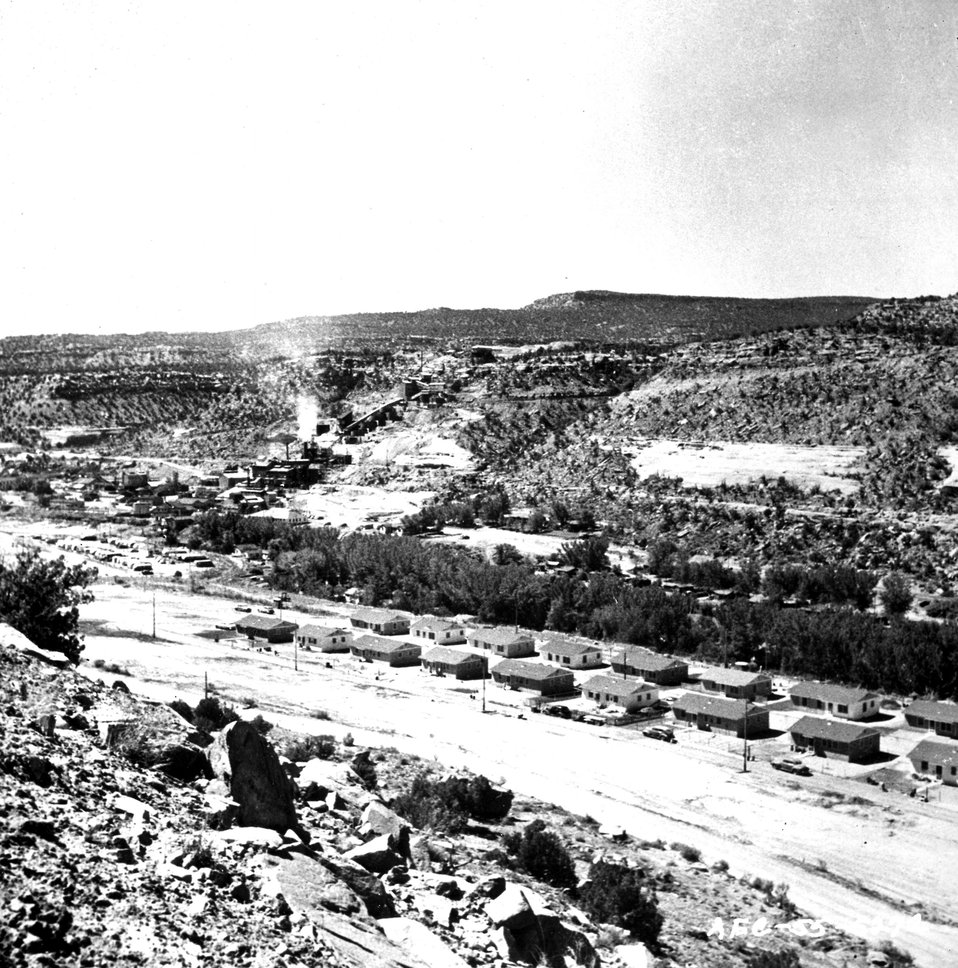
One of the new housing developments in the town of Uravan, Colorado, where the largest uranium ore-treatment plant in the Colorado Plateau is located. c. 1955